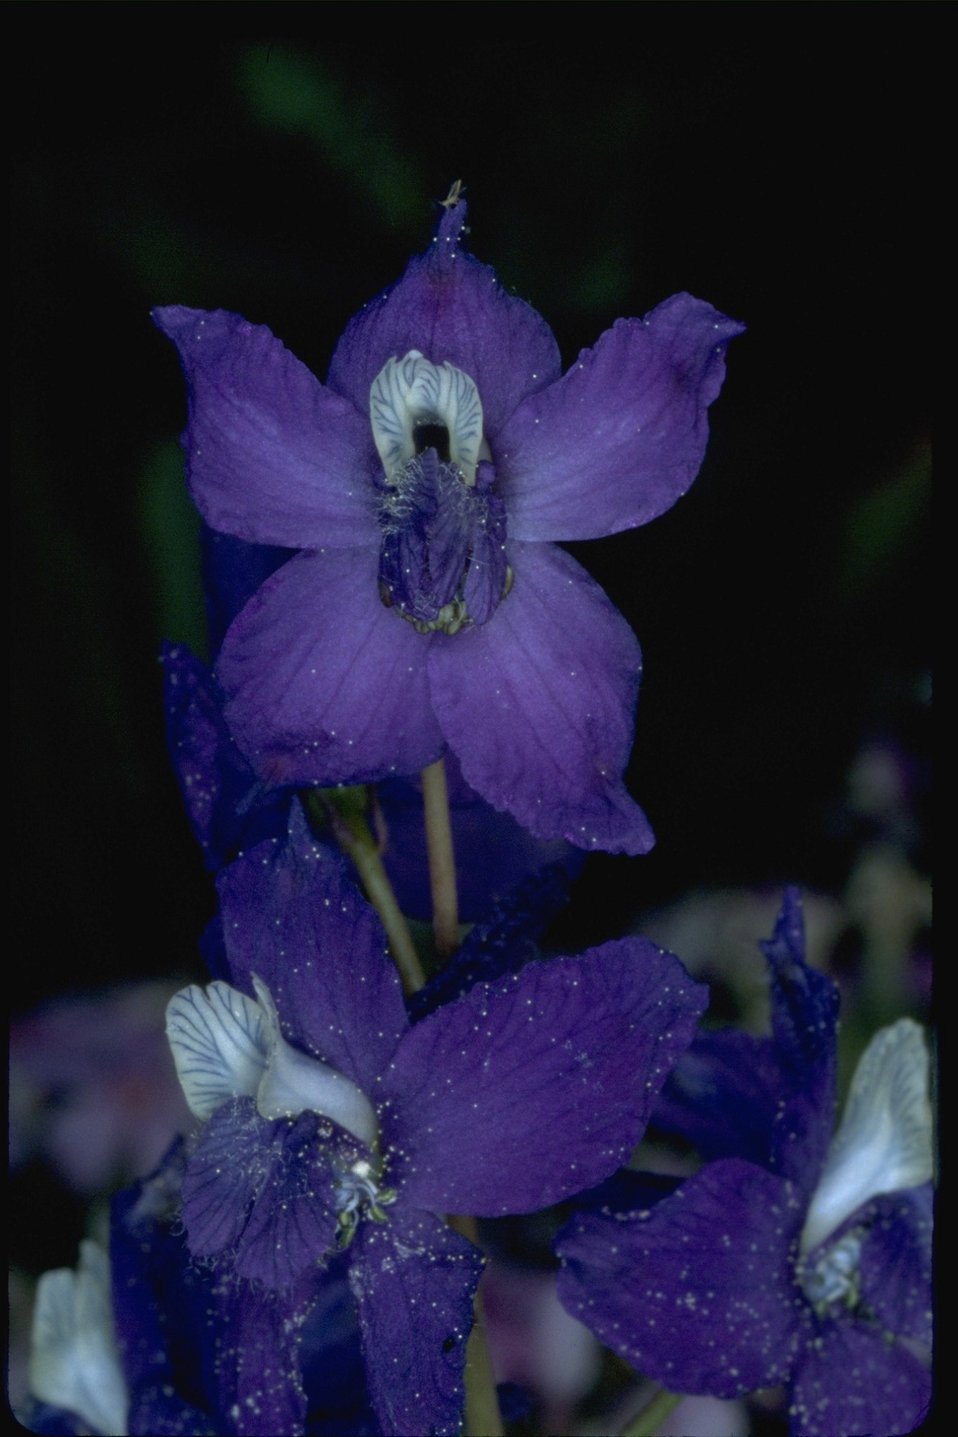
Close up shot of delphinium/Larkspur with dew.